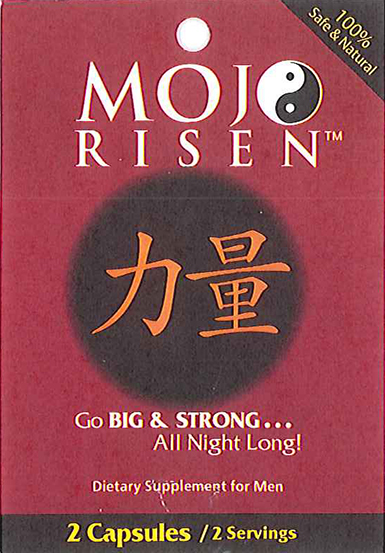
RECALLED – Dietary Supplement

April 1, 2014 – Product Recall – Nova Products, Inc. Issues Voluntary Nationwide Recall of Dietary Supplements with Undeclared Active Pharmaceutical Ingredients.